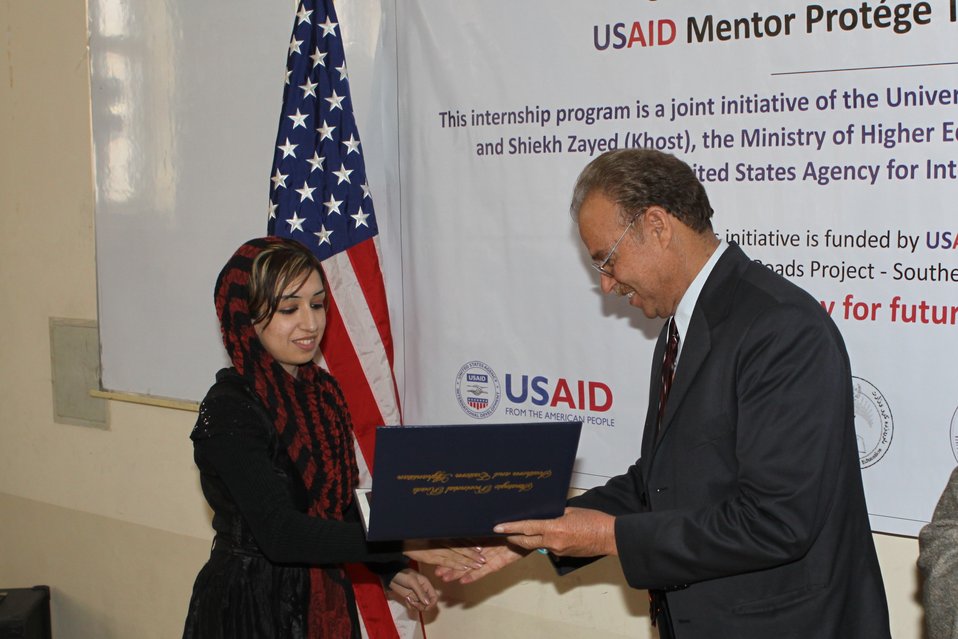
Female University Students Complete Internship

Kabul, Afghanistan | March 16, 2011 – In response to a demand for qualified Afghan engineers, Kabul University celebrated completion of an intensive five-month Mentor Protégé Training Program today by 10 female fourth year university students. The Training Program is a joint effort between the Government of the Islamic Republic of Afghanistan, the U.S. Agency for International Development (USAID), and the Universities of Kabul, Kandahar, Alberoony in Kapisa, Shiekh Zayed in Khost. The graduation ceremony highlighted collaboration with these national institutions in building the technical skills of young Afghans, made possible by USAID.

Four of the interns are engineers, while the remaining six are from the faculties of computer science, economics, and psychology.

Speaking about the event, H.E. Minister of Public Works Abdul Qudus Hamidi said, “The future of Afghanistan lies in developing the skills of our youth, and the engineering skills of these graduates today represent a small but important step forward for the country.”

Keynote speakers at the ceremony included H.E. Deputy Minister of Higher Education Abdul Rahim; USAID Senior Deputy Mission Director Robert Hellyer; and Chancellor of Kabul University Professor Hamidullah Amin. Approximately 150 people, including current and former students attended the graduation.

Launched last year, the Mentor Protégé Training Program has provided qualifying students the opportunity to intern with USAID’s Strategic Provincial Roads-South and East Afghanistan project and gain practical experience in a real work environment. The goal of the program was to offer interns the opportunity to gain hands-on experience to reinforce their formal studies. A total of 30 students from four national universities have benefitted from this program.

“The promotion of women’s rights is integrated into the overall U.S. Government development strategy and can be found in key programs, including education, healthcare, security, rule of law, political participation, agriculture, and economic development,” said Robert Hellyer. “The U.S. Government is committed to the Afghan leadership of programs that directly enhance development, particularly as it relates to women’s issues.”

This event also highlighted the learning achievements of students and emphasized the importance of hands-on internship programs. The curriculum is designed to instill students with the knowledge and confidence to qualify for engineering positions upon completion of their fourth year at their respective universities.